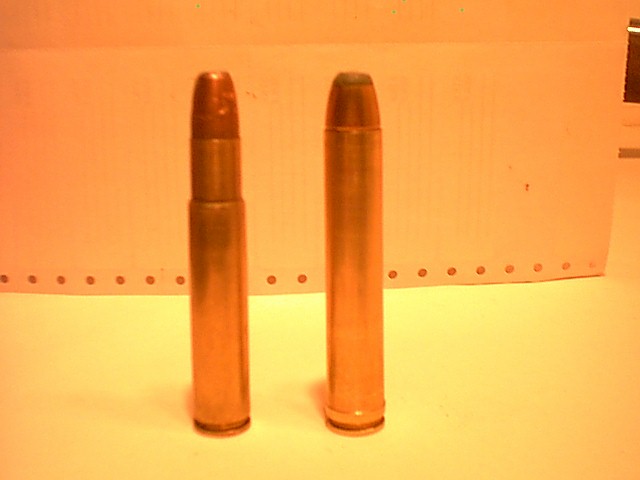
A .585 Hubel Express Cartridge